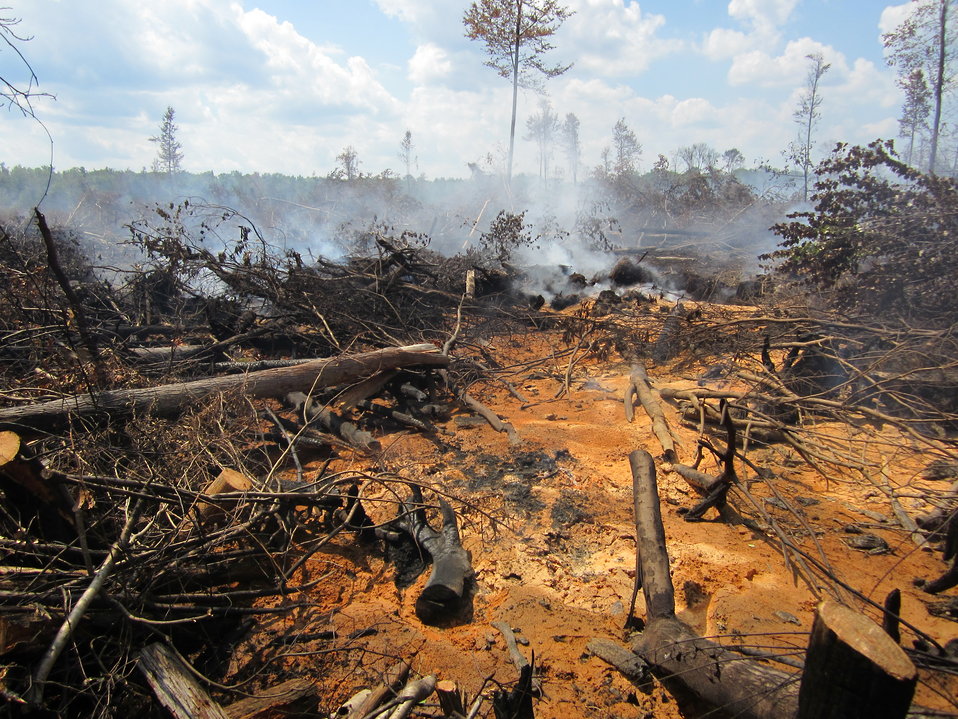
Burnt orange

Suffolk, VA, August 2011: Burned peat has a distinctive color at the Lateral West Fire in Great Dismal Swamp .